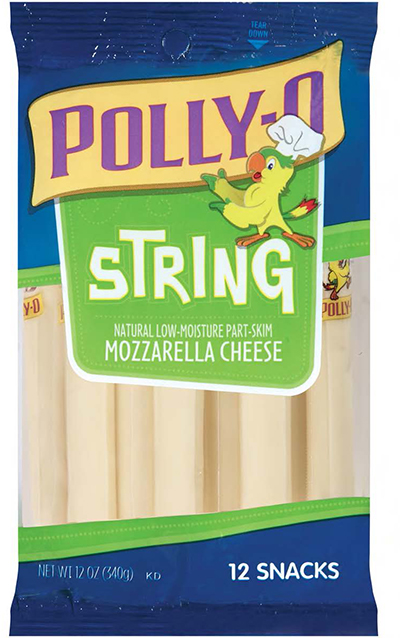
RECALLED – Cheese

October 25, 2013 – Product Recall – Kraft Voluntarily Recalls Some Varieties of Kraft And Polly-O String Cheese And String Cheese Twists Due to Premature Spoilage.